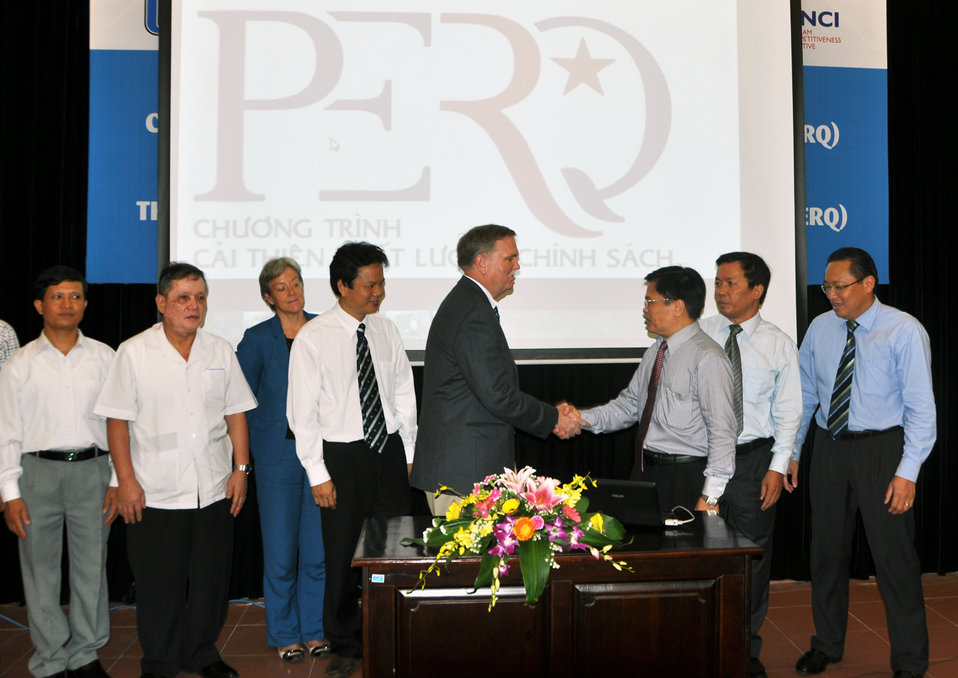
New public-public initiative in regulatory reform promotes growth: www.perq.vn

USAID contributes technical support for Vietnam's latest effort to promote effective regulatory impact assessment.